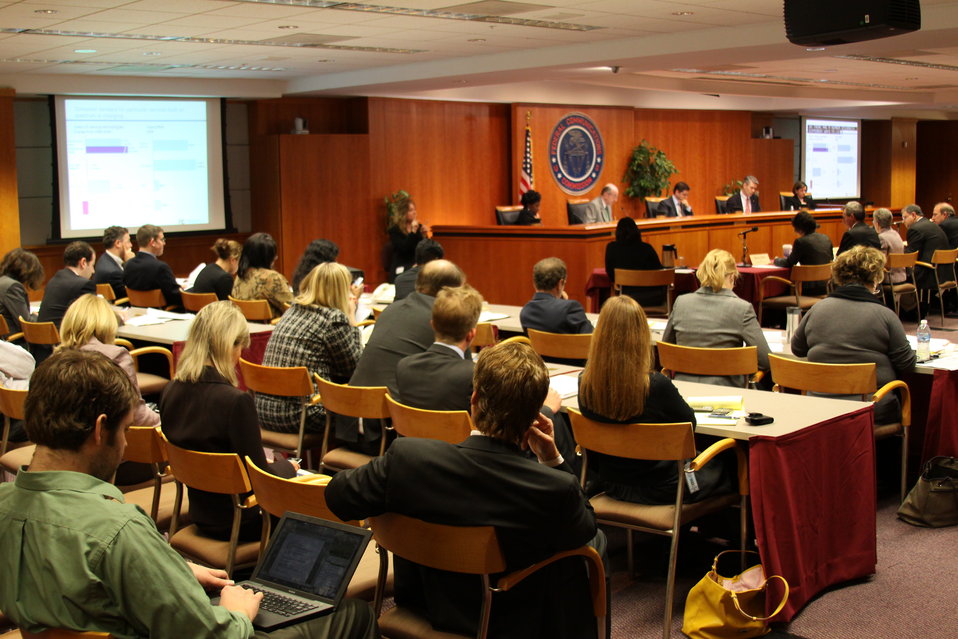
November Open Meeting